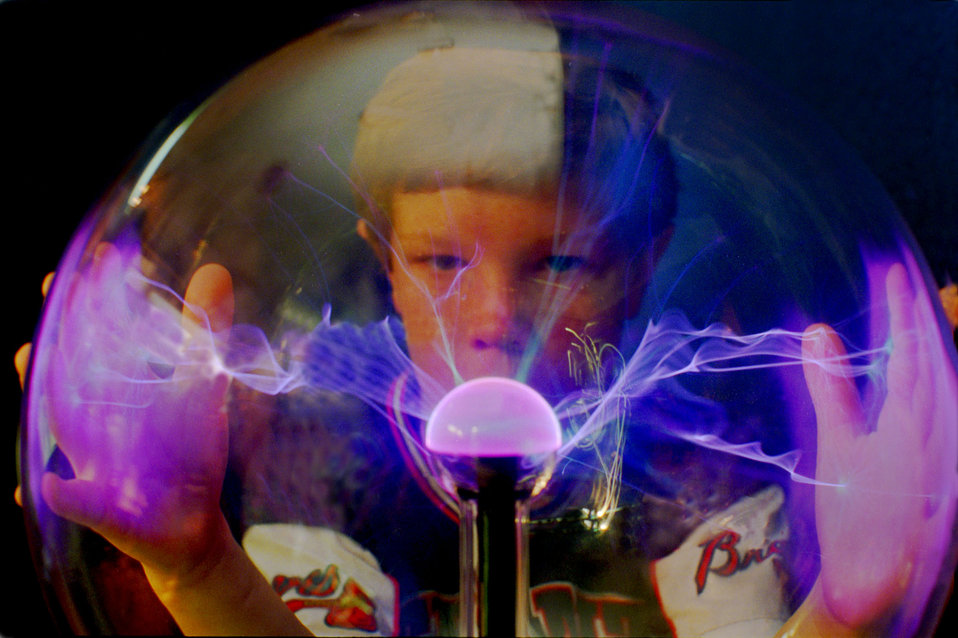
Exhibit 'Lighten Up' at the American Museum of Science and Energy Oak Ridge

94-167 DOE photo by Lynn Freeny

Exhibit 'Lighten Up' at the American Museum of Science and Energy Oak Ridge Tennessee 3-24-1994